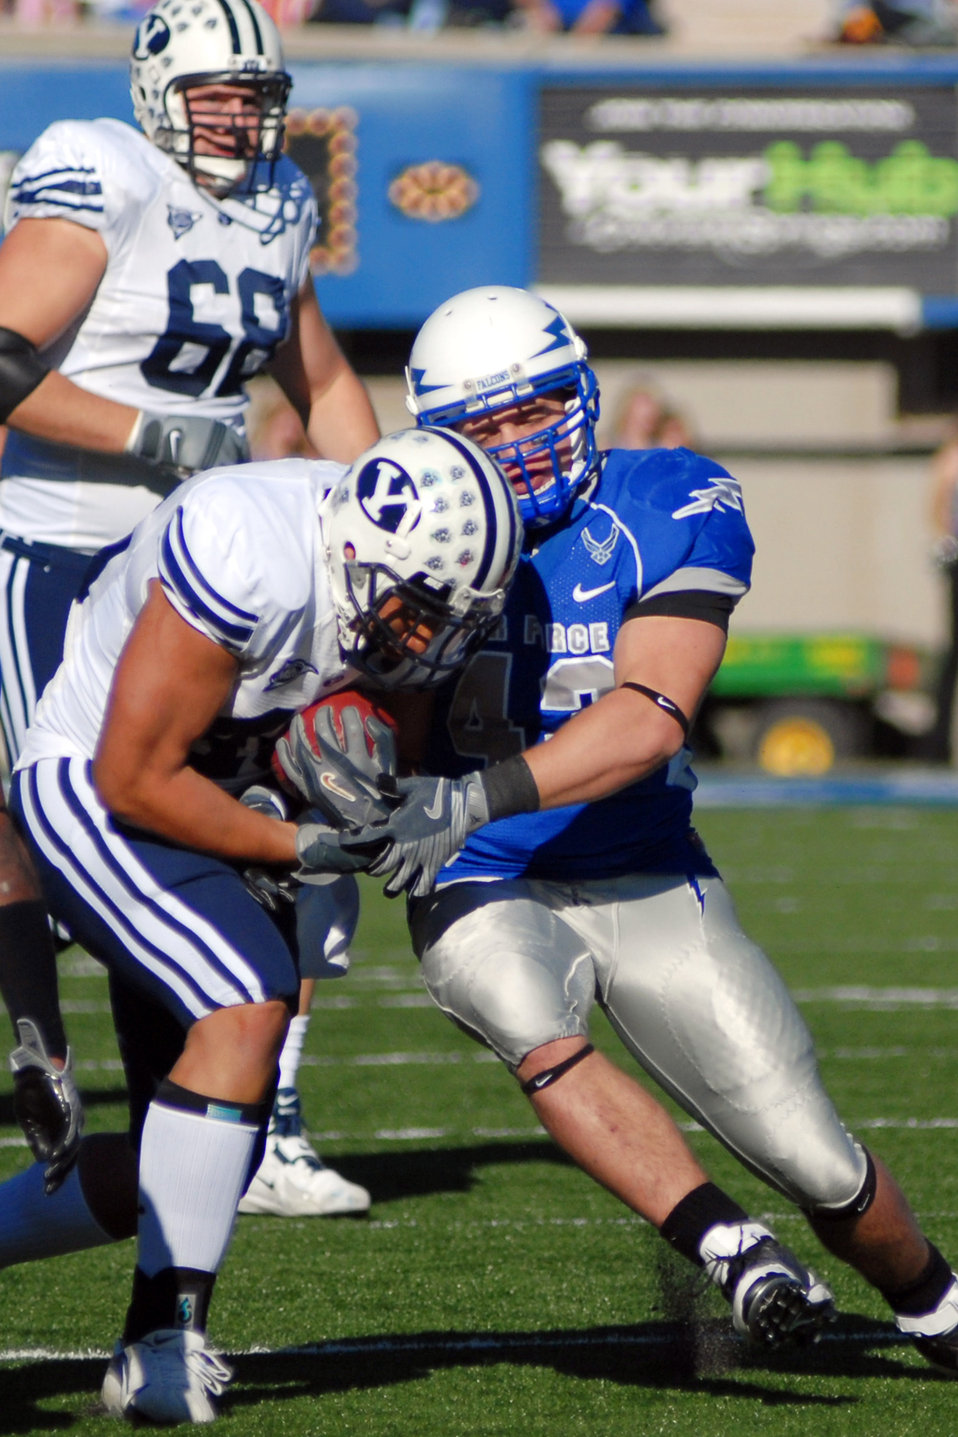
Rough third quarter ground Falcons

Air Force inside linebacker Justin Moore lays a hit during the Falcons 38-24 lost to Brigham Young University Nov. 15 at Falcon Stadium in Colorado.